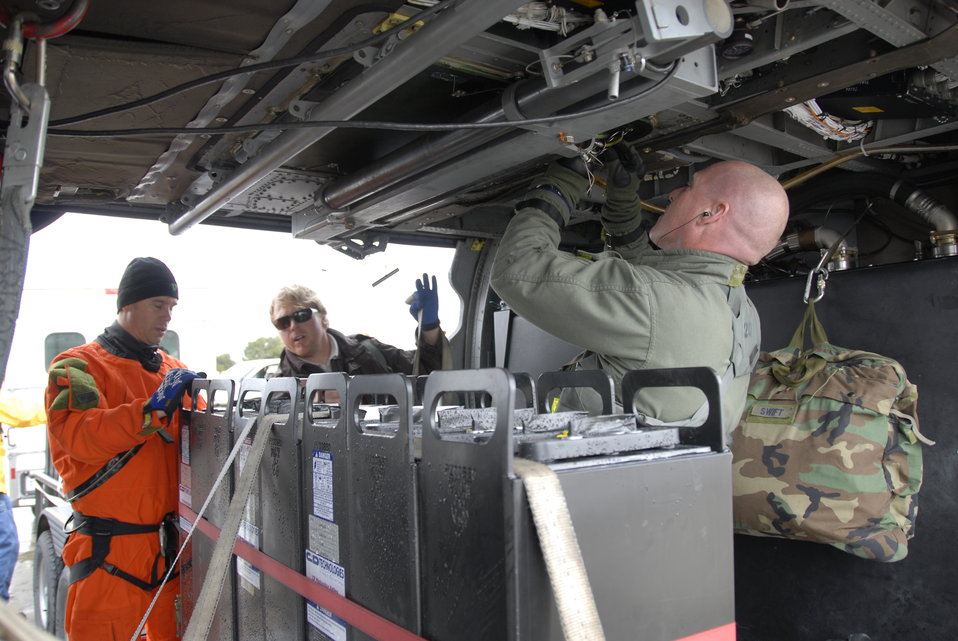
FARALLONS BATTERY MISSION

Airmen from the California Air National Guard's 129th Rescue Wing at Moffett Federal Airfield, Calif., secure new photovoltaic batteries in an HH-60G Pave Hawk helicopter Feb. 17. The unit is supporting the U.S. Fish and Wildlife Service by transporting the batteries to power a lighthouse and workshop at the FWS research facility on the Farallon Island 30 miles west of San Francisco.